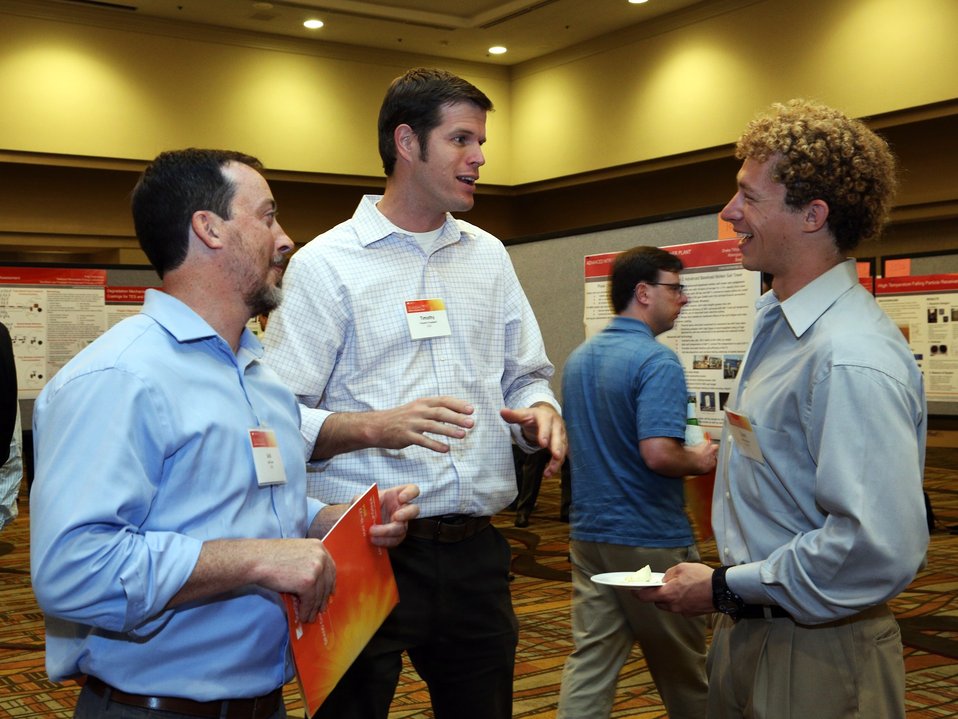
Tech Forum 16

Attendees and awardees connect at the Tech Forum.